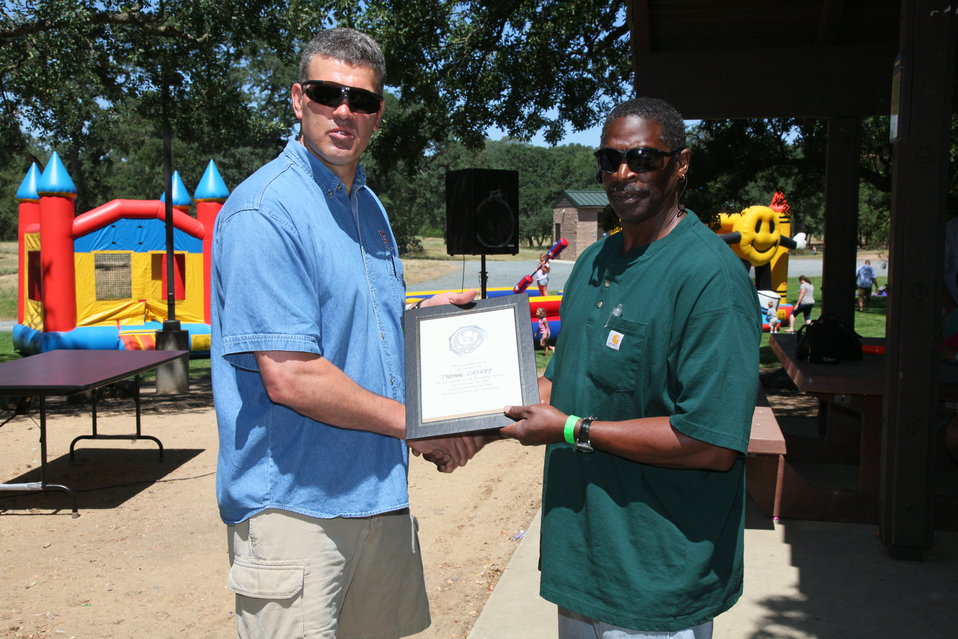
2011 Annual Picnic